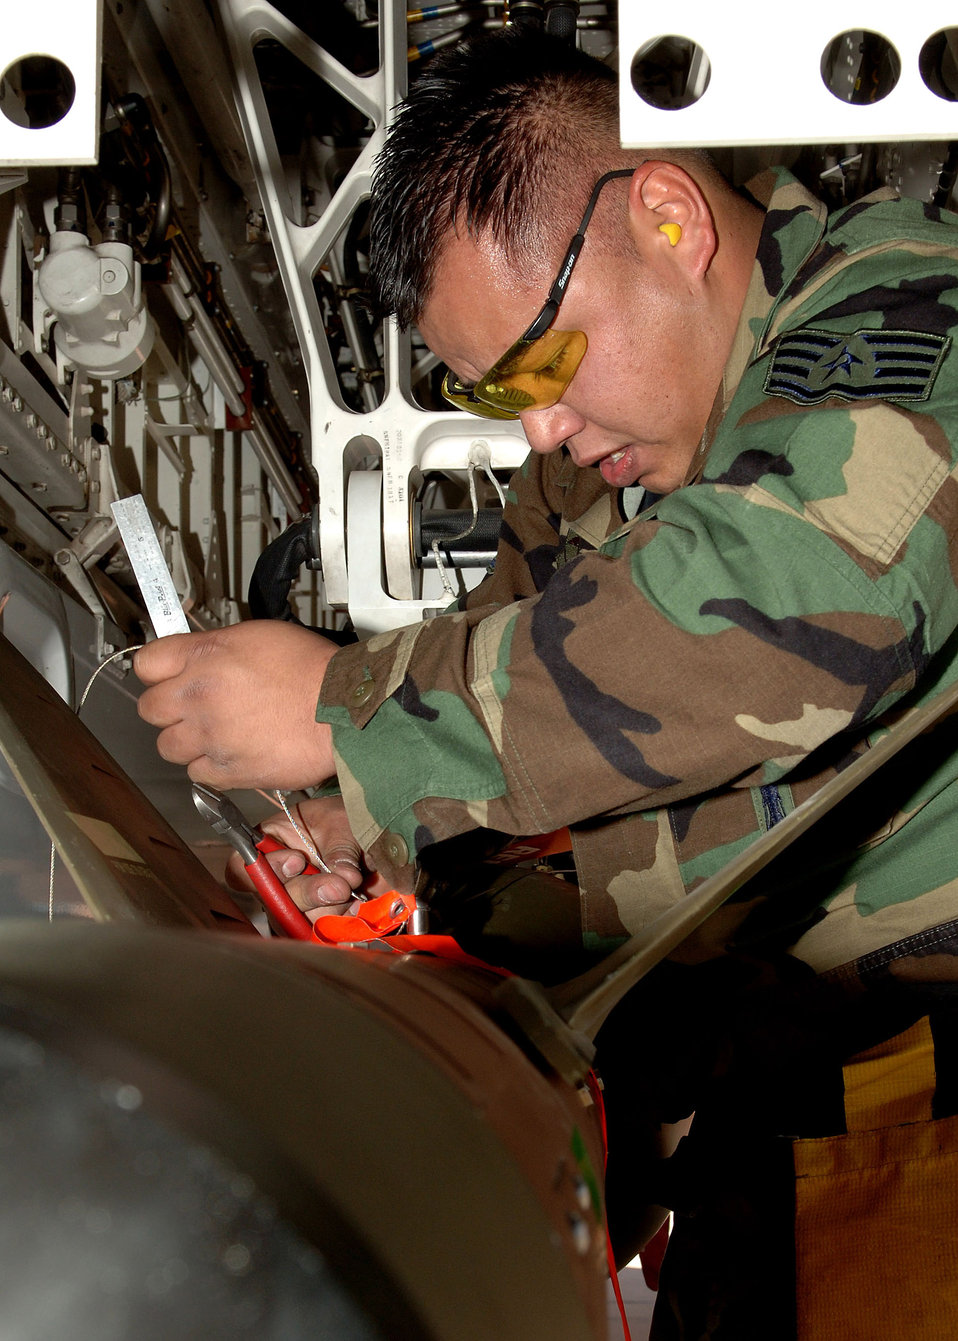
Holloman weapon loaders compete for last time on F-117

Staff Sgt. Jose Cortez tightens the screws on a guided bomb unit-27 during the F-117 Nighthawk Weapons Load Crew of the Year Competition Jan. 18 at Holloman Air Force Base, N.M. This is the final weapons load crew of the year competition for the F-117 at Holloman AFB.